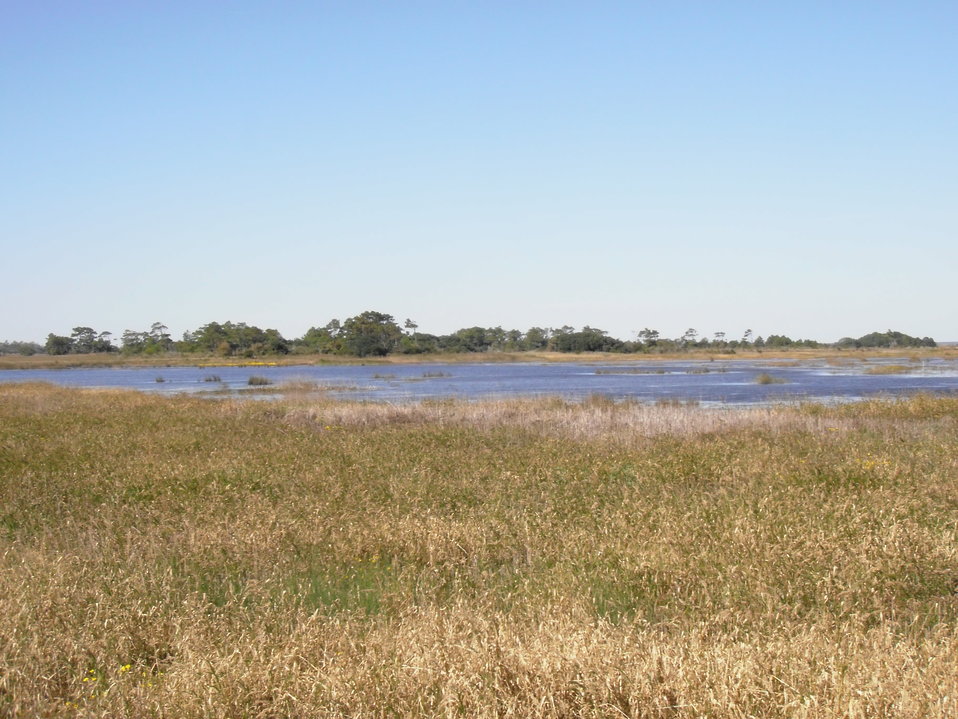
Marsh at Back Bay National Wildlife Refuge in Virginia.